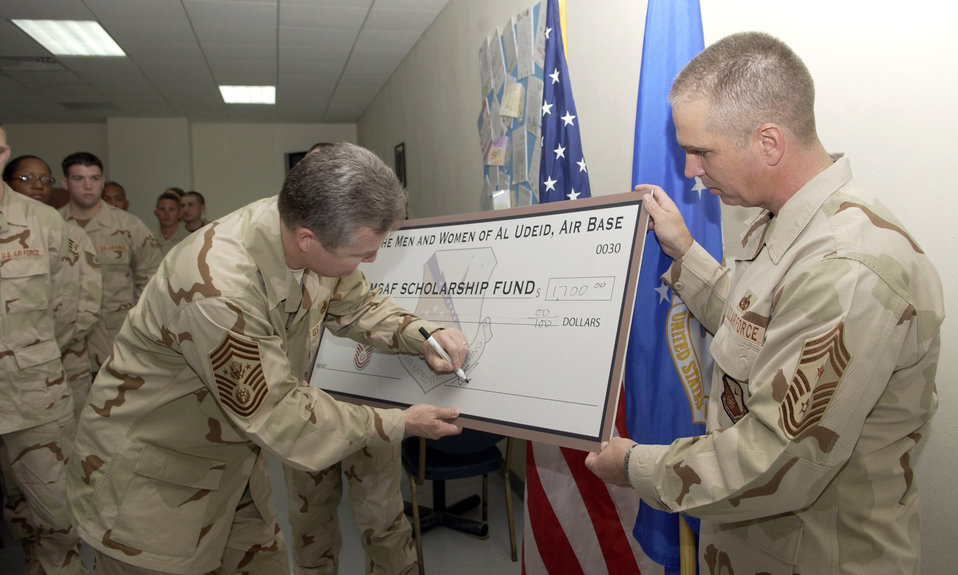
Top chief visits troops

SOUTHWEST ASIA (AFPN) -- Chief Master Sgt. of the Air Force Gerald R. Murray accepts a check on behalf of the 379th Air Expeditionary Wing, Jan. 3. The check is in amount of $1,700 for the CMSAF Scholarship Fund.